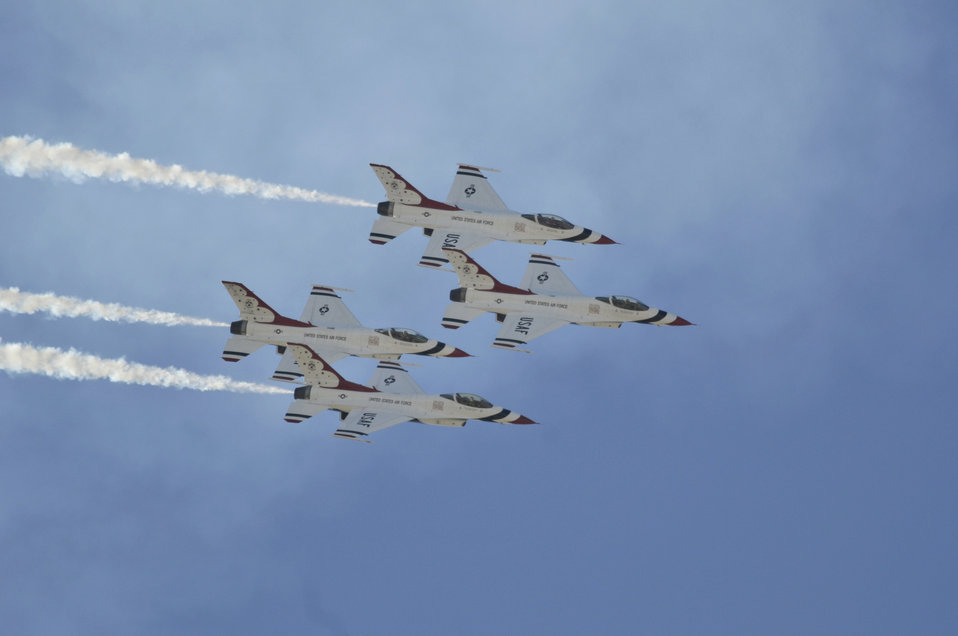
AirFest 2010

The U.S. Air Force air demonstration team, the Thunderbirds, perform precision aerial maneuvers Nov. 6, 2010, during AirFest 2010 at Lackland Air Force Base, Texas.